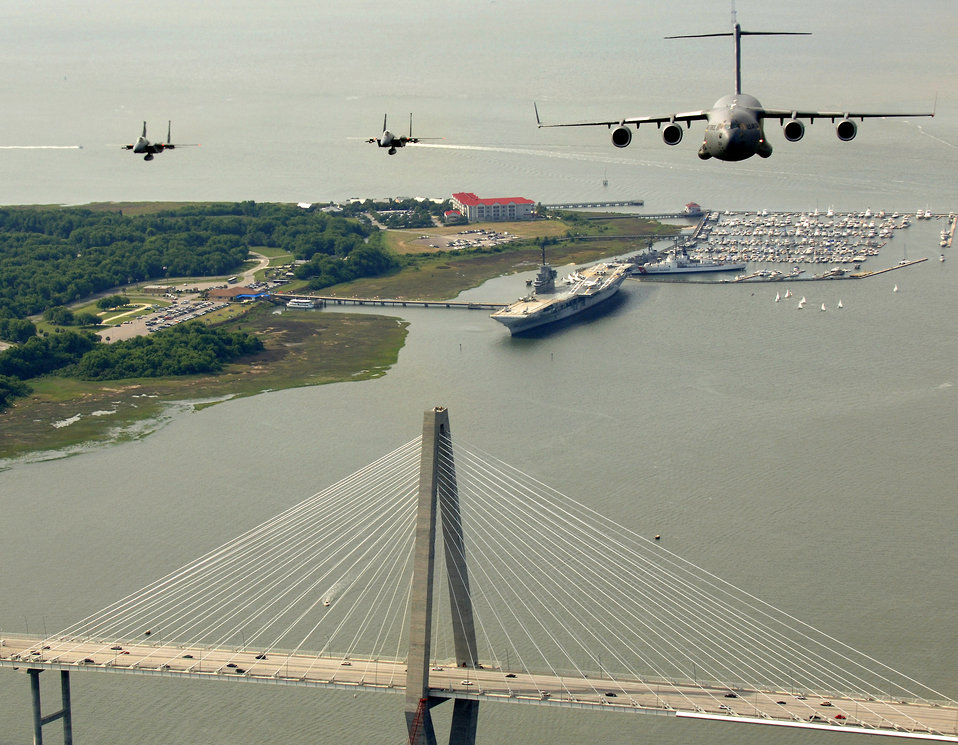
C-17s over Charleston

Two F-15 Eagles from the 60th Fighter Squadron, Eglin Air Force Base, Fla., escort a C-17 Globemaster III from the 14th Airlift Squadron, Charleston AFB, S.C., as they fly over the USS Yorktown and the Arthur J. Ravenel Jr. Bridge in the Charleston, S.C., area during a local training mission on Tuesday, May 16, 2006.